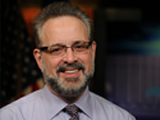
Ron Valdiserri